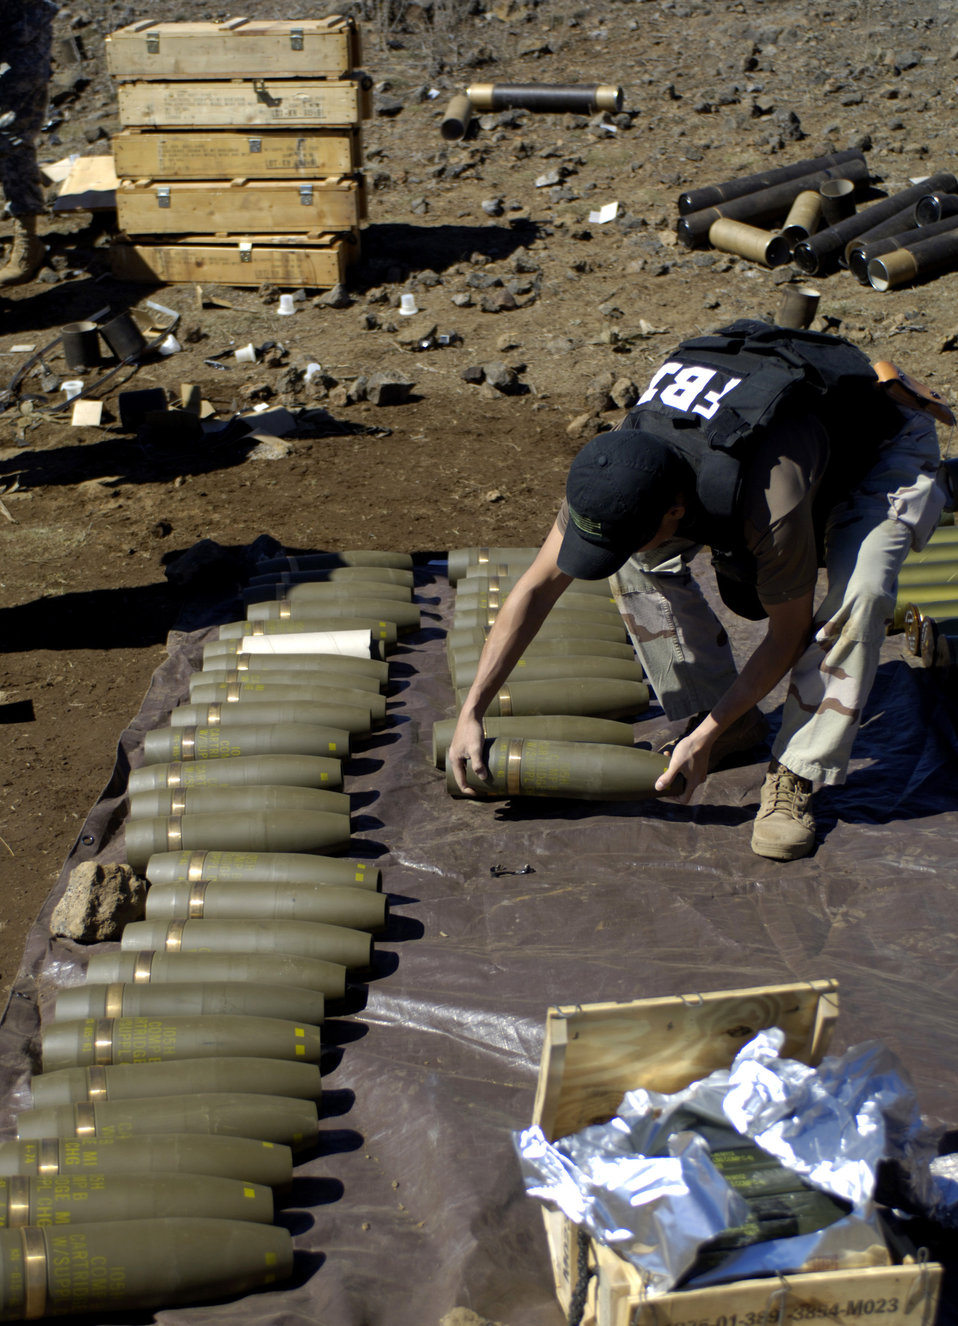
Air Force attends FBI training

POHAKULOA TRAINING AREA, Hawaii (AFPN) -- FBI Special Agent Sam Mum lines up 105 mm rounds for a vehicle-borne explosive device scenario. The FBI, along with Army cadre, conducted a large vehicle post blast investigator's course here. It included instruction on investigative techniques and evidence collection.